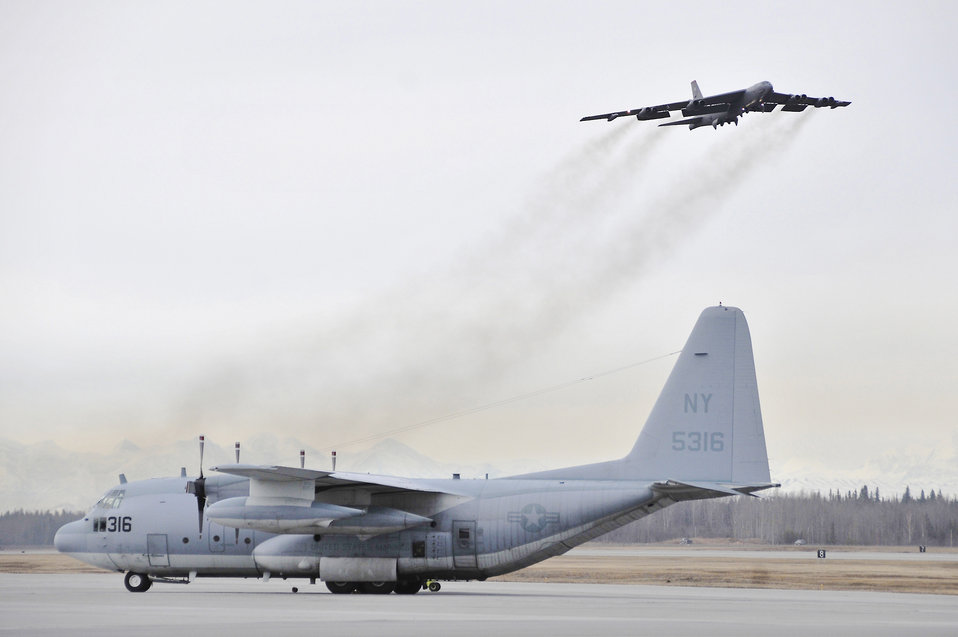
Strategic power

A B-52H Stratofortress launches during Red Flag-Alaska, April 19, 2010, at Eielson Air Force Base, Alaska. The B-52 is assigned to Barksdale AFB, La.